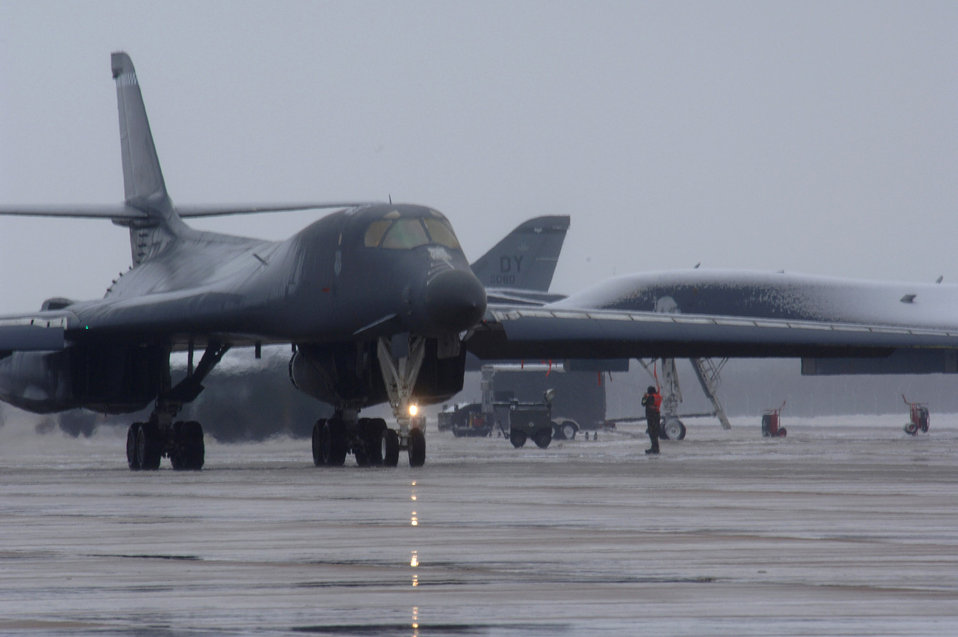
Deep in the frozen heart of Texas

A B-1 Lancer taxies Jan. 17 on the flightline at Dyess Air Force Base, Texas. Operations continued at the base, despite a winter freeze that affected much of the state.